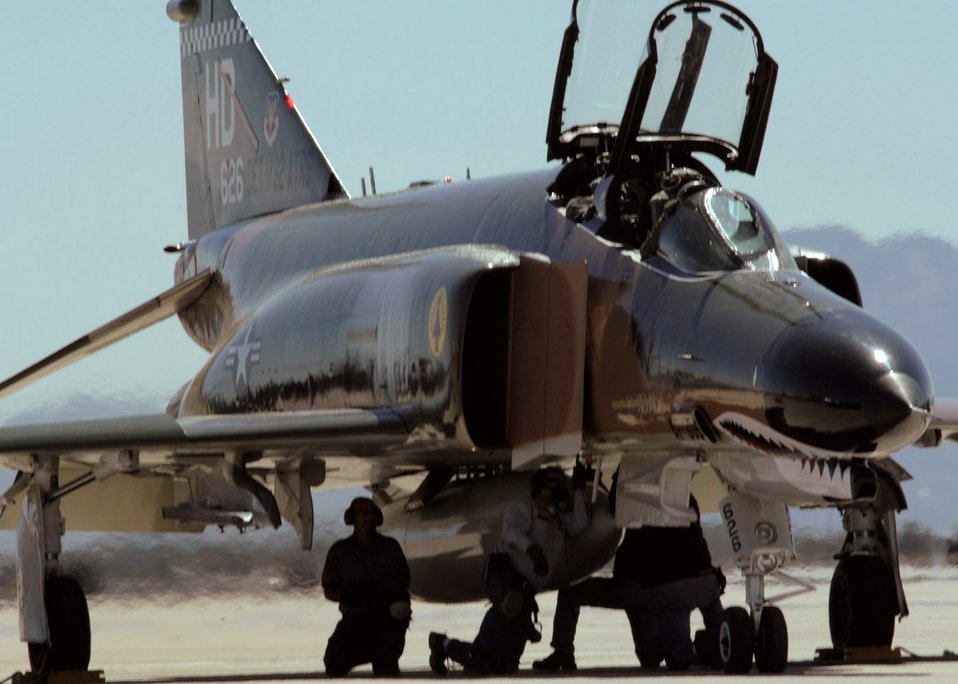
The Phantom returns

During the 2008 Heritage Flight Conference, crewmembers perform pre-flight maintenance on an F-4 Phantom II March 7 at Davis-Monthan Air Force Base, Ariz. The conference allows civilian and military pilots to train together for the upcoming air show season.